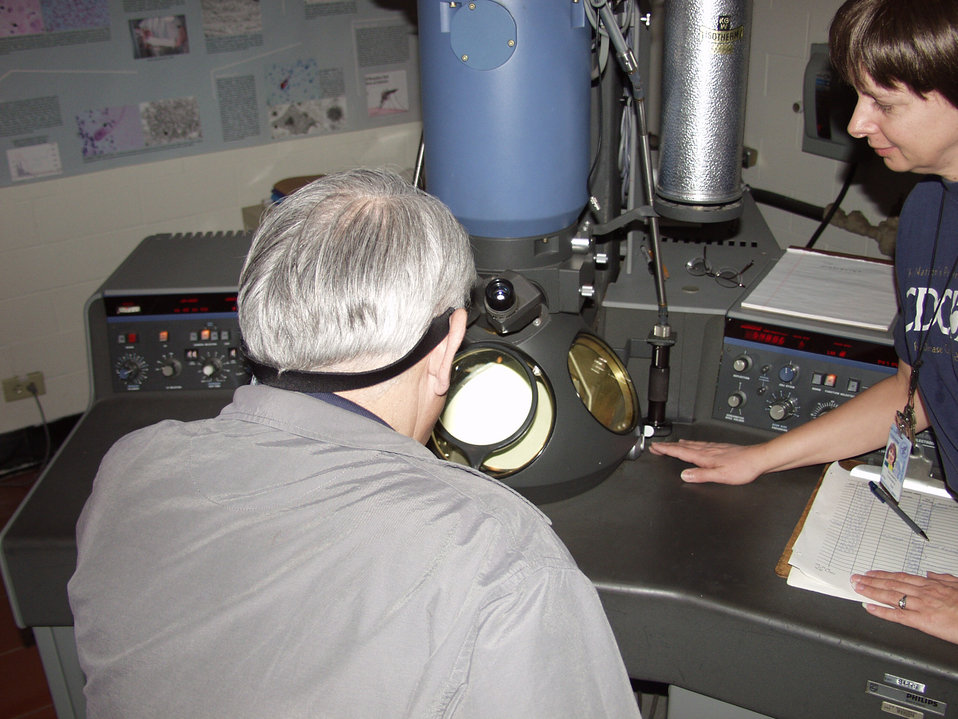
CDC researchers Thomas Ksiazek D.V.M., Ph.D. (left) and Cynthia Goldsmith, M.S. (right) are working at an electron microscope.